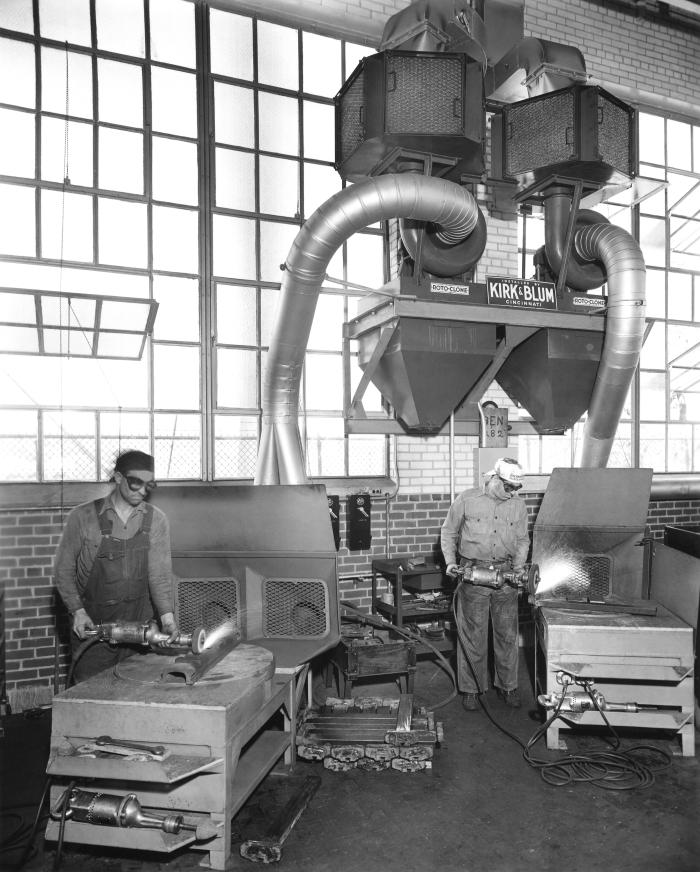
This historical photograph was provided by the Center for Disease Control's (CDC), National Institute for Occupational Safety and Health (NIOSH). The image depicted two factory workers in the process of grinding unidentified metallic components, and using a Kirk & Blum Roto-Clone� exhaust ventilation system, in order to ingest the debris particles ground off during this process. Note that both men were wearing protective goggles, but no gloves, or filtered breating devices.